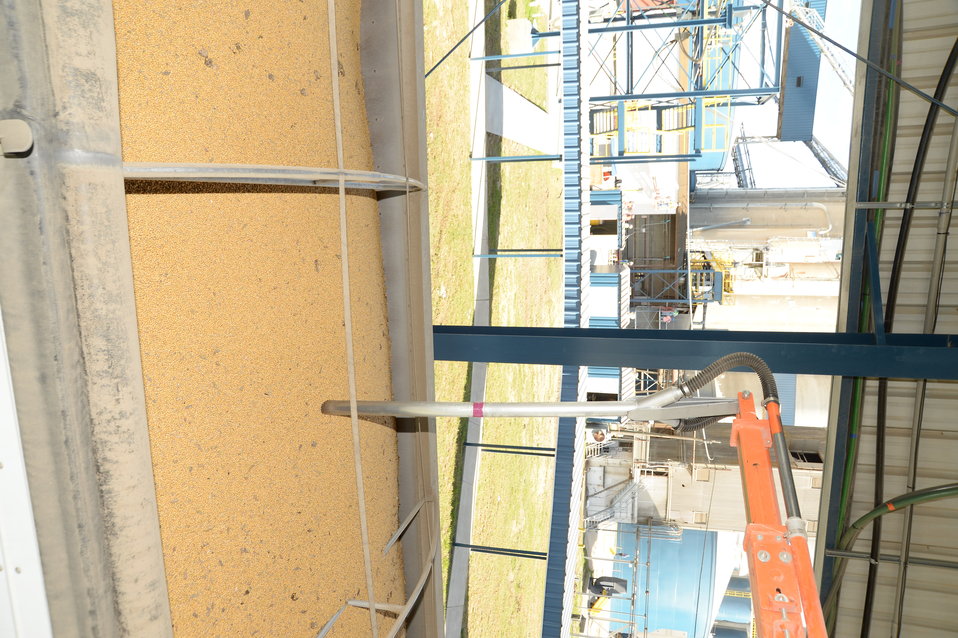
A sample of grain is removed from a barge for testing at the U.S. Department of Agriculture’s (USDA) Grain Inspection, Packers and Stockyards Administration (GIPSA) Federal Grain Inspection Service (FGIS) laboratory in New Orleans, LA on Tuesday, Nov. 19, 2013.